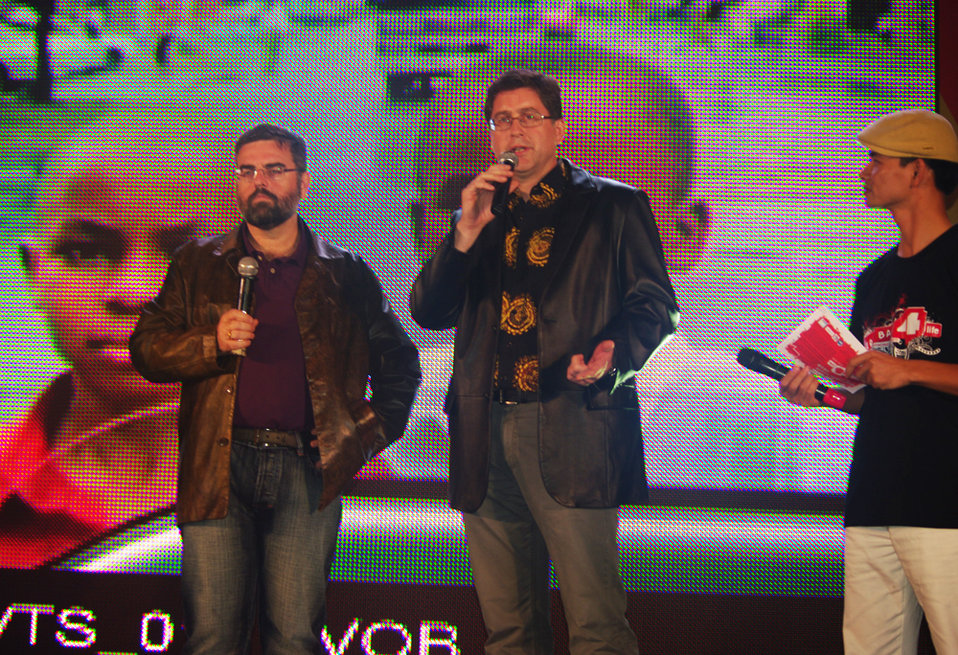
USAID supports dance4life to raise awareness of HIV and fight stigma in Vietnam

USAID's Health Office Director Jonathan Ross explains stigma and why it is important to fight it.